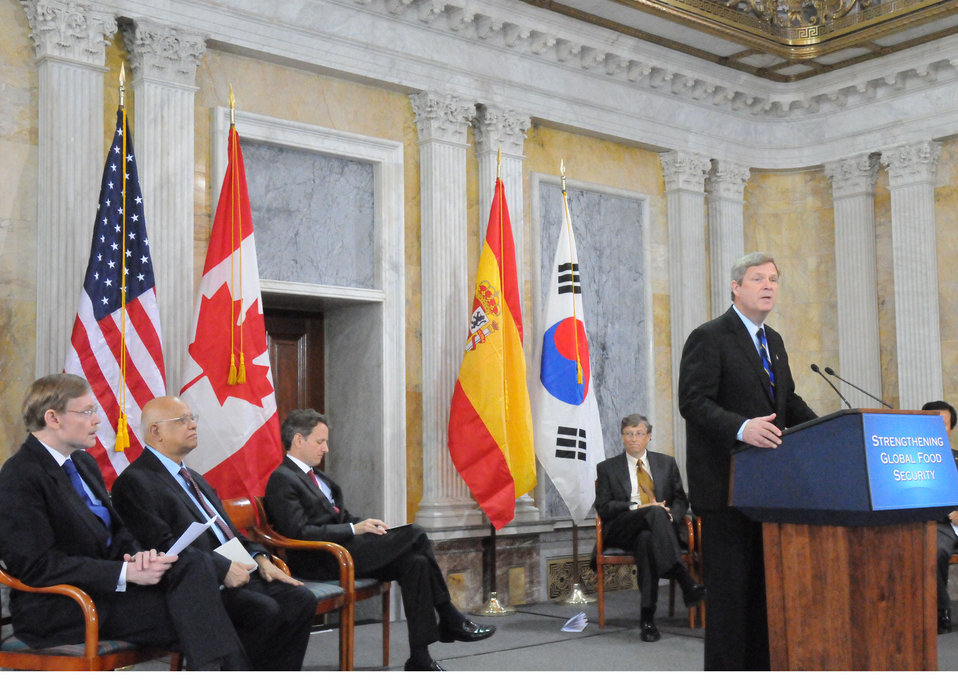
Agriculture Secretary Tom Vilsack makes remarks at the Strengthening Global Food Security conference held at the Treasury Department in Washington, D. C., on Thursday, April 22, 2010. (Seated L to R behind Secretary Vilsack are World Bank President Robert Zoellick, Bangladesh Finance Minister Abdul Muhith, Treasury Secretary Tim Geithner, and Co-chair of the Bill and Melinda Gates Foundation Bill Gates). USDA photo 10di1325-95